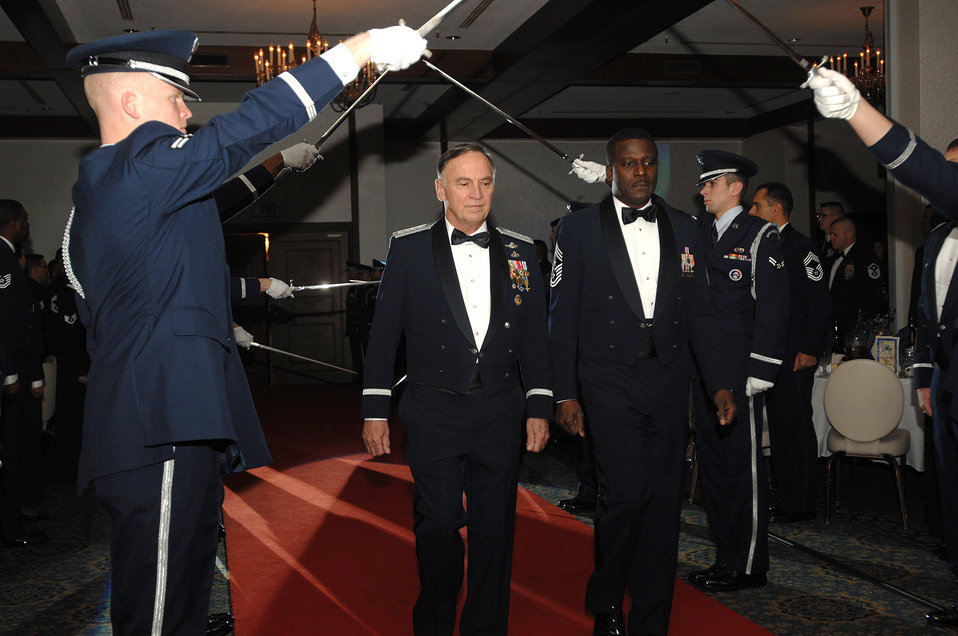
Gen. Hobbins honored with Order of the Sword

Gen. William T. Hobbins, U.S. Air Forces in Europe commander, arrives for a USAFE Order of the Sword induction ceremony in his honor along with USAFE Command Chief Master Sergeant Gary G. Coleman, who also was chief master sergeant of the mess for the ceremony. The Order of the Sword induction is the highest honor the enlisted corps can bestow on an individual.